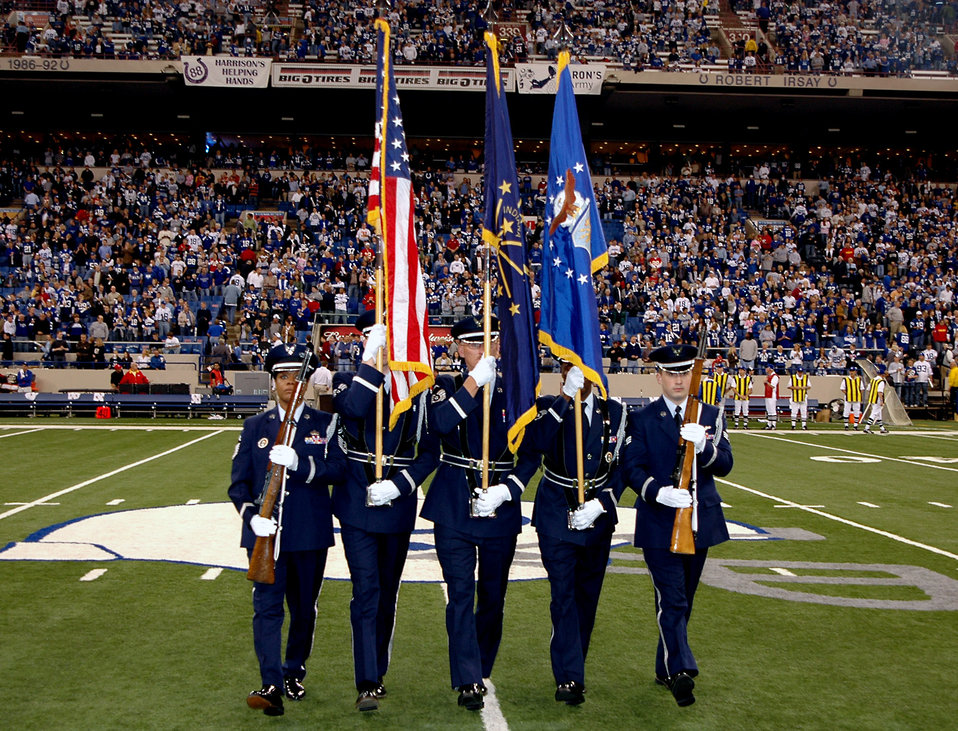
Air Force presents top civic award to Indianapolis Colts

The Grissom Air Reserve Base Honor Guard presents the colors prior to kick-off of the National Football League game between the Indianapolis Colts and Kansas City Chiefs Nov. 18 in Indianapolis. The Colts are the recepients of this year's Air Force American Spirit Award.